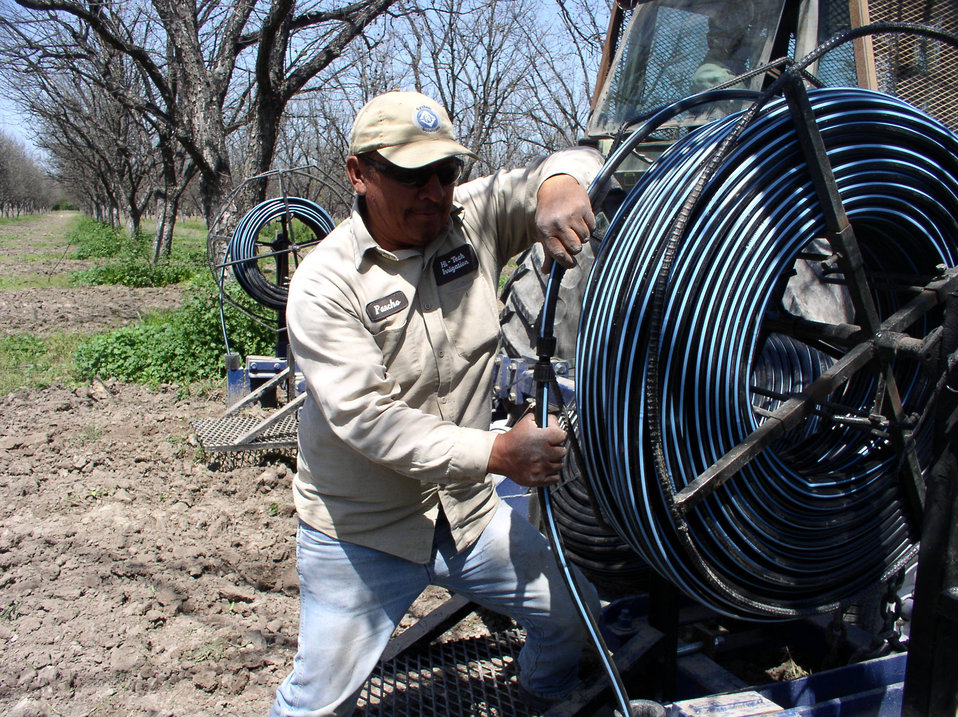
A contractor connects the end of one drip line tube to a fresh spool of tubing, during the installation of the micro irrigation drip tube in one of the pecan orchards at Arrowhead Farms of Crystal City, TX, is accomplished on Tuesday, March 29, 2010. The farm has been owned by Mr. Akram Mohammad since 2005. The 719-acre farm with 10,000 trees, features some orchards with underground micro irrigation system that feeds water to the roots of 4,380 pecan trees on 146 acres. Mr. Mohammad said, “USDA (U.S. Department of Agriculture) was essential to my business and trees surviving the recent exceptional drought. The trees were stress free thanks to underground micro-irrigation. This is essential to the future growth of Texas agriculture and good for America.” U.S. Department of Agriculture’s (USDA) Environmental Quality Initiative Program (EQIP) awarded Mr. Mohammad a $130,000 grant in 2008. He provided $26,000 for the balance of the $156,000 total cost to install a 146-acre underground micro-irrigation for 4,380 trees.